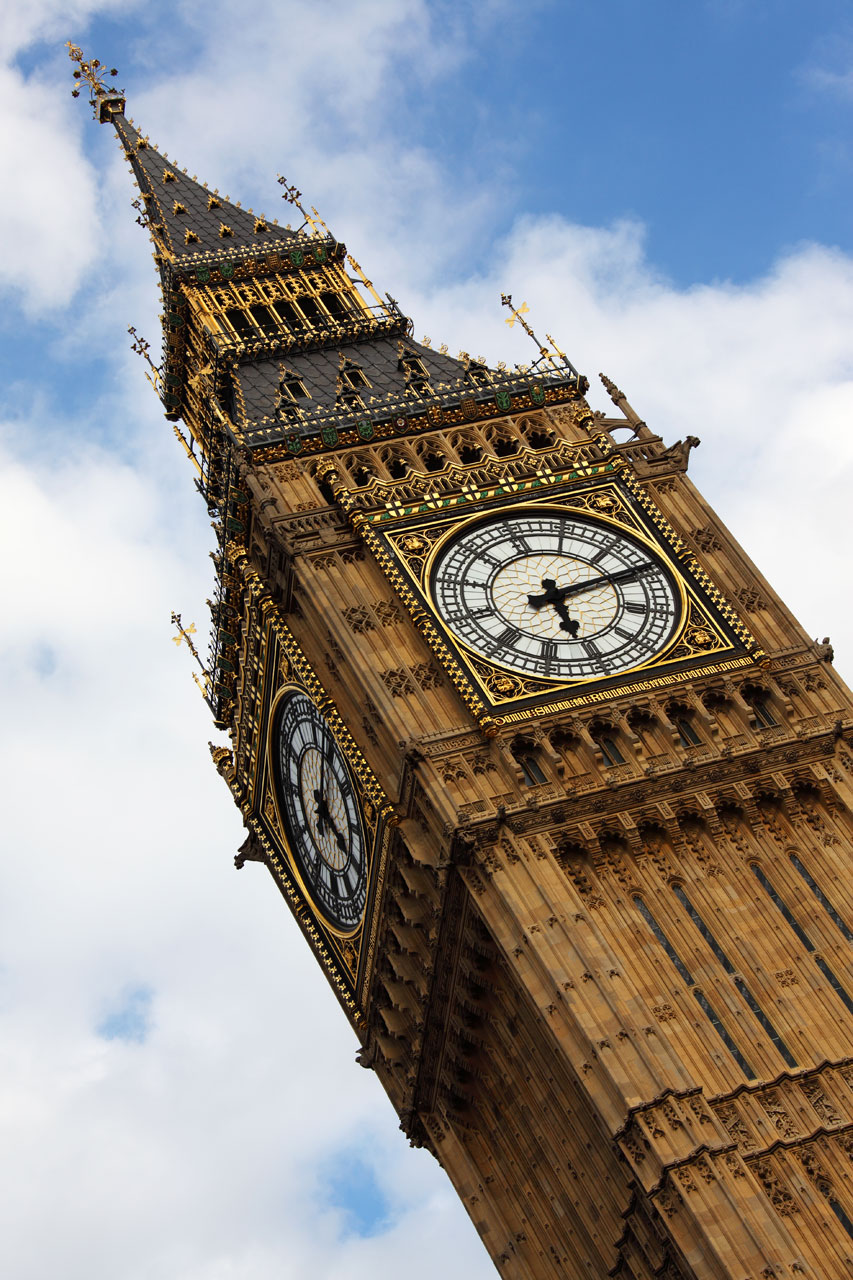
Big ben in angle against blue sky in london.